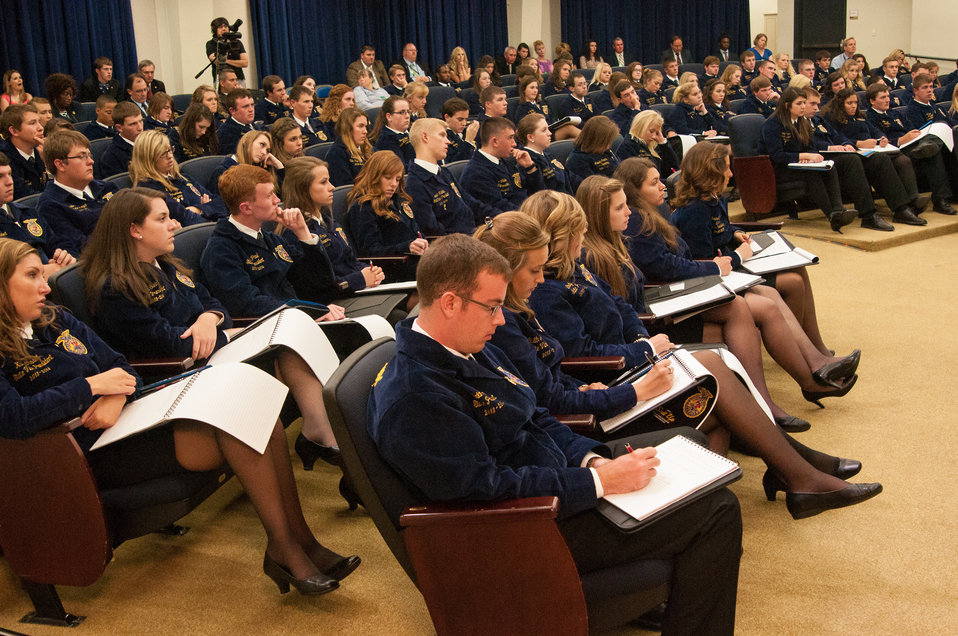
FFA State President Brian Chism (KY) takes notes during Agriculture Secretary Tom Vilsack’s discussion on domestic and foreign agriculture at a meeting of the White House Rural Council on Wednesday, Jul. 24, 2013 in Washington, D.C.